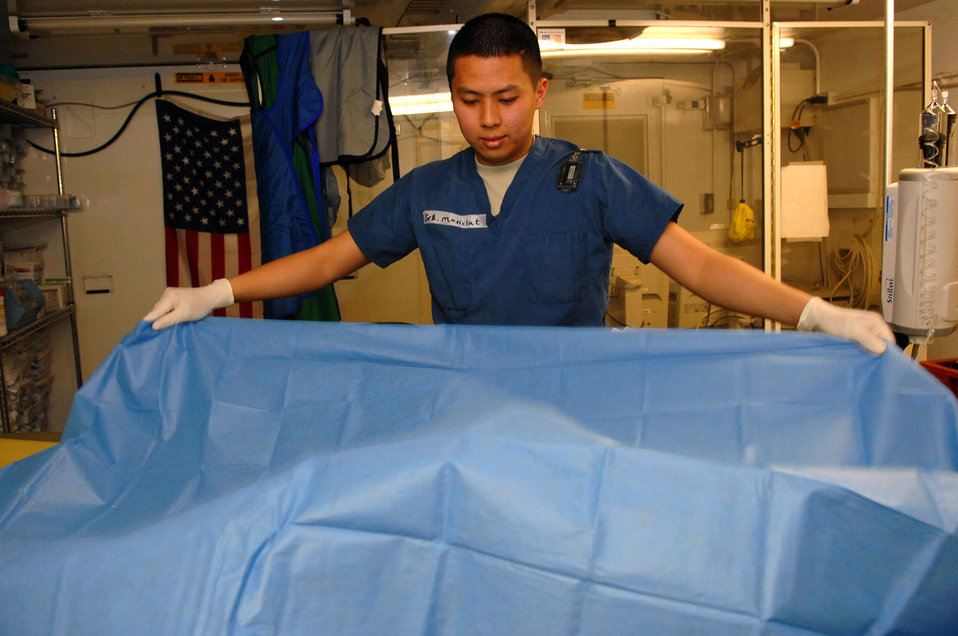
Airmen have X-ray vision

Senior Airman Jason Masiclat sets up a CT scan for a trauma patient at the Air Force Theater Hospital Feb. 20 at Balad Air Base, Iraq. CT scans are a vital tool used to determine internal bleeding or major trauma to any area of the body without having to do exploratory surgery. Airman Masiclat is a 332nd Expeditionary Medical Support Squadron radiology technologist deployed from Wright-Patterson Air Force Base, Ohio.